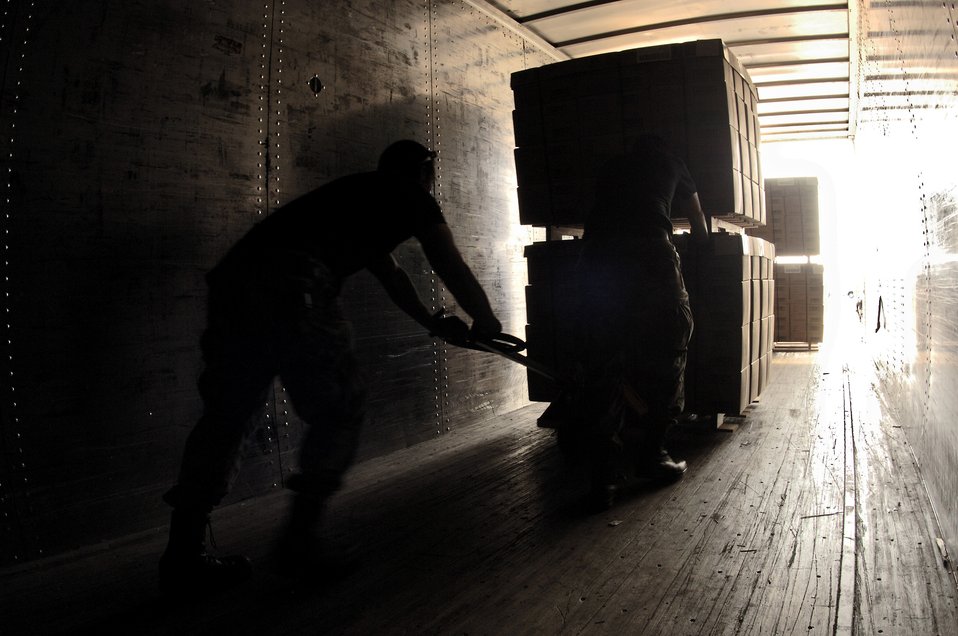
Meals Ready to Eat

ELLINGTON FIELD, Texas - Senior Airmen Palmer Eden and Dennis Horning use a pallet jack Sept. 25 to maneuver a shipment of meals ready to eat to the end of a trailer where a forklift will load them into helicopters. Aircraft activity increased dramatically at the airfield in support of the Hurricane Rita relief effort. Active duty, Guard and Reserve components of the Air Force, Army and Coast Guard filled the parking ramp to deliver supplies that included medicine and bottled water.